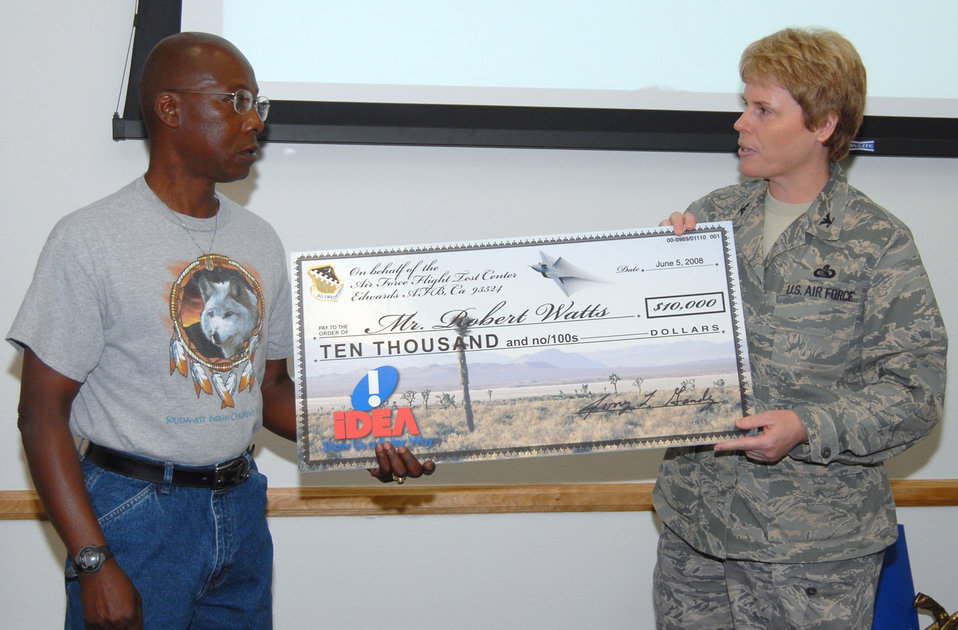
Civilian receives $10,000 for canopy repair 'IDEA'

Robert Watts receives a $10,000 check June 11 from Col. Nancy Wharton for an idea he submitted to the Innovative Development through Employee Awareness program. Mr. Watts is a 412th Maintenance Squadron ordnance inspector and Colonel Wharton is the 95th Air Base Wing vice commander.